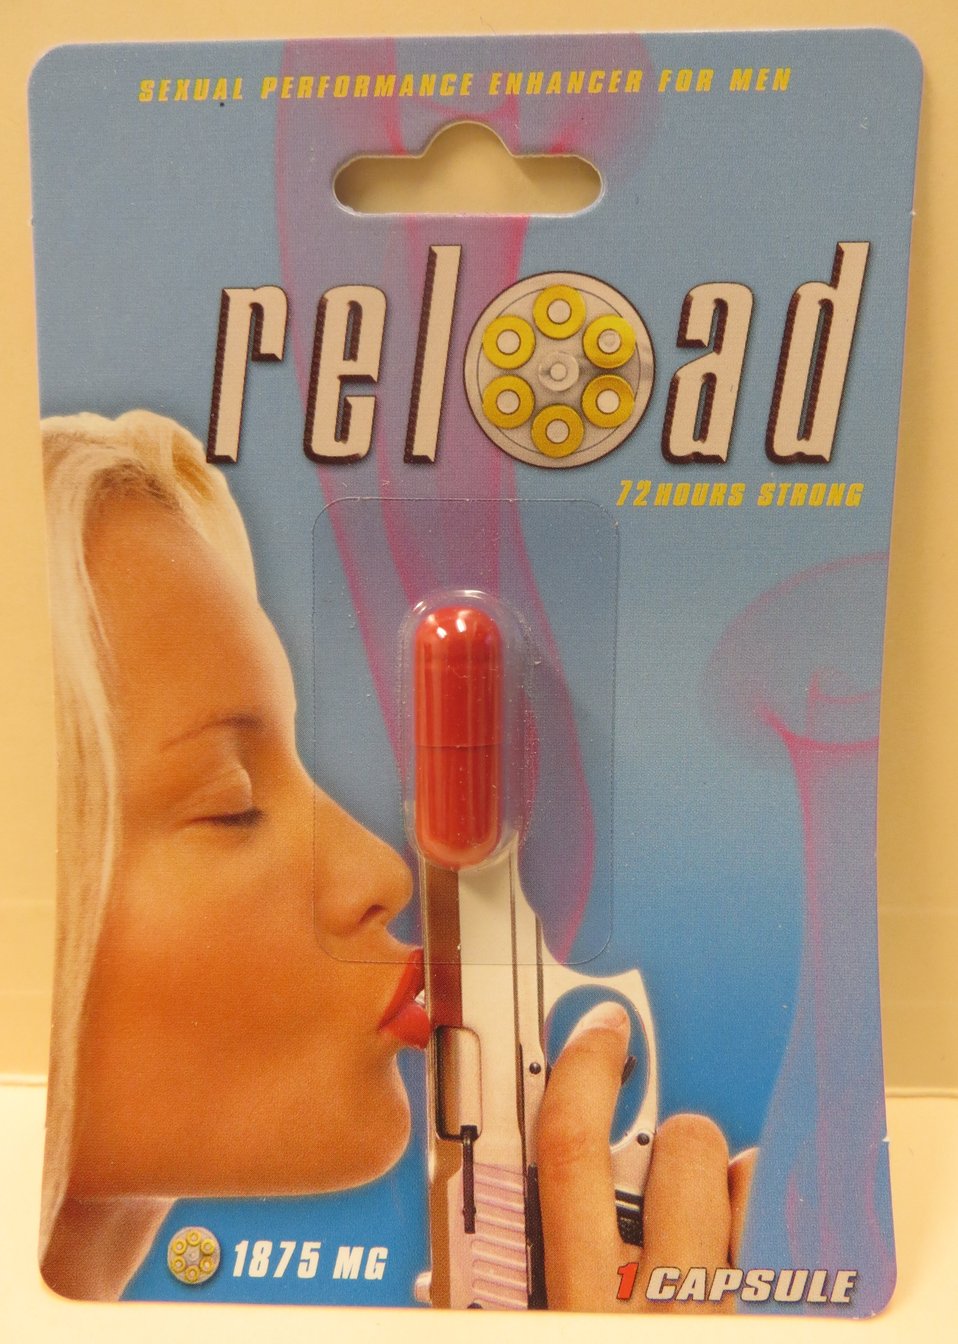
Reload

June 10, 2013 - The FDA is advising consumers not to purchase or use 'Reload,' a product promoted and sold for sexual enhancement. The product was found to contain undeclared sildenafil. For more information, go to www.fda.gov/Drugs/ResourcesForYou/Consumers/BuyingUsingMe...

And read this Consumer Update: Beware of Fraudulent ‘Dietary Supplements’